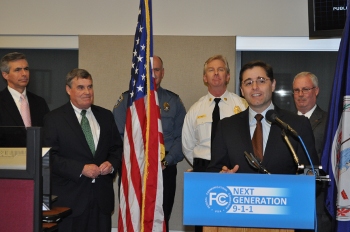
Next gen Chairman speech

Next Generation 9-1-1; Arlington, VA. November 23, 2010